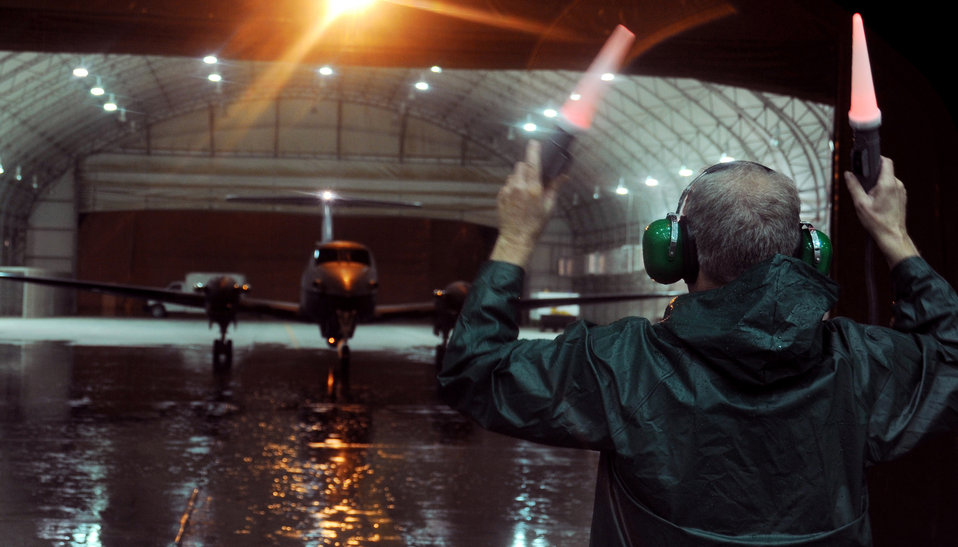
MC-12 reaches 1000th combat mission

Gary Dunlap marshals out the 362nd Expeditionary Reconnaissance Squadron's 1,000th MC-12 Nov. 16, 2009, at Joint Base Balad, Iraq. Activated in June 2009, the 362nd reached 1,000 missions a few days past their five-month mark. Mr. Dunlap is a civilian contractor attached to the 362nd Expeditionary Reconnaissance Squadron.